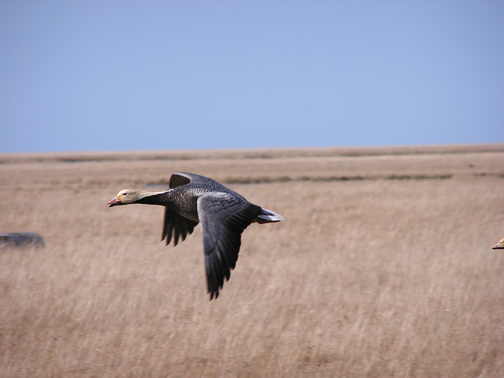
Emperor Goose in Flight - Close View.